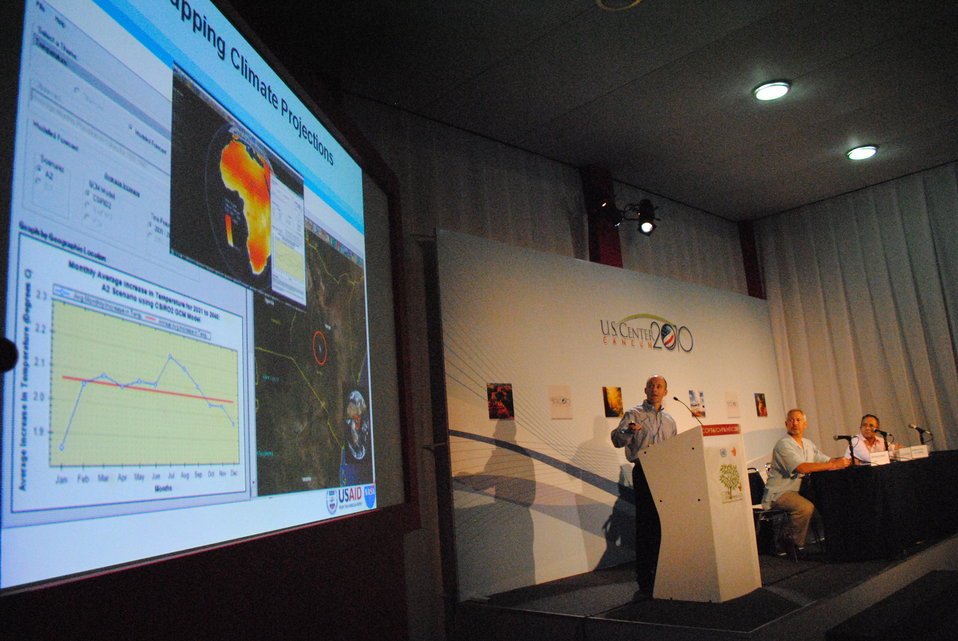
NASÄ's Daniel Irwin Showcases the SERVIR Project

Daniel Irwin of NASA explains the SERVIR Project at a side event at the U.S. Center at COP-16 in Cancun, Mexico, on December 2, 2010.